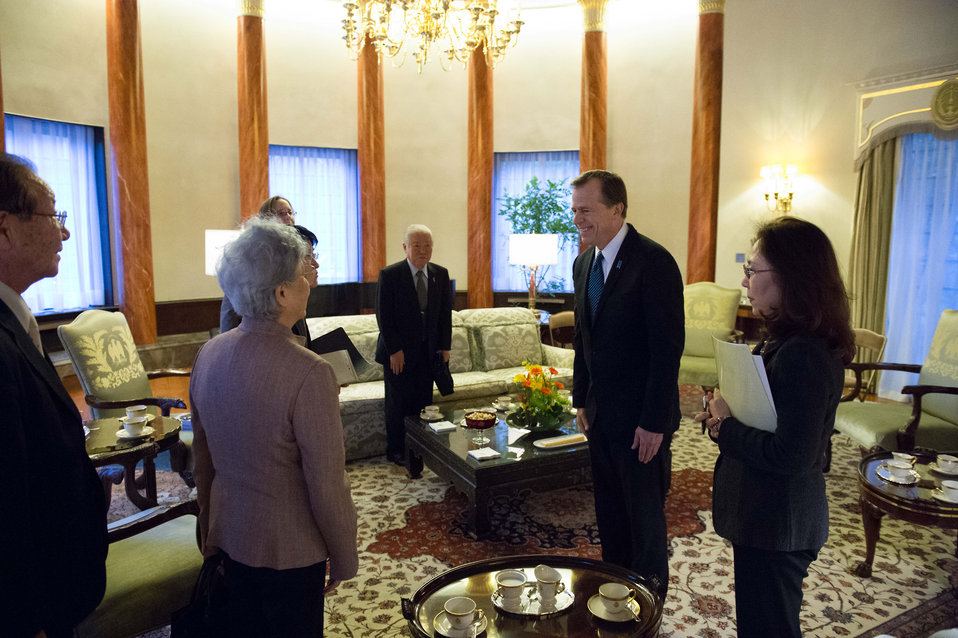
Ambassador Kennedy and Special Representative Davies Meet Abductee Families

U.S. Ambassador to Japan Caroline Kennedy, with Special Representative for North Korea Policy Glyn Davies, meets with family members of the abductees in Tokyo, Japan, on January 30, 2014.